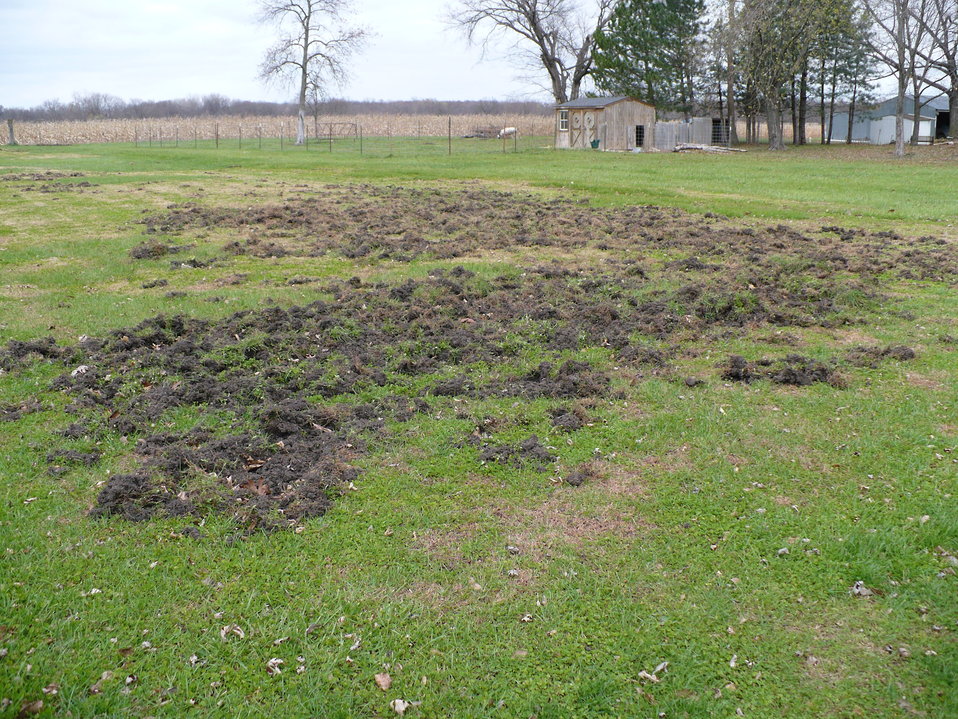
In just a few nights, feral swine can decimate lawns, native habitats and pasturelands. Common feral swine damage includes rooting, wallowing, and trampling of sensitive vegetation.